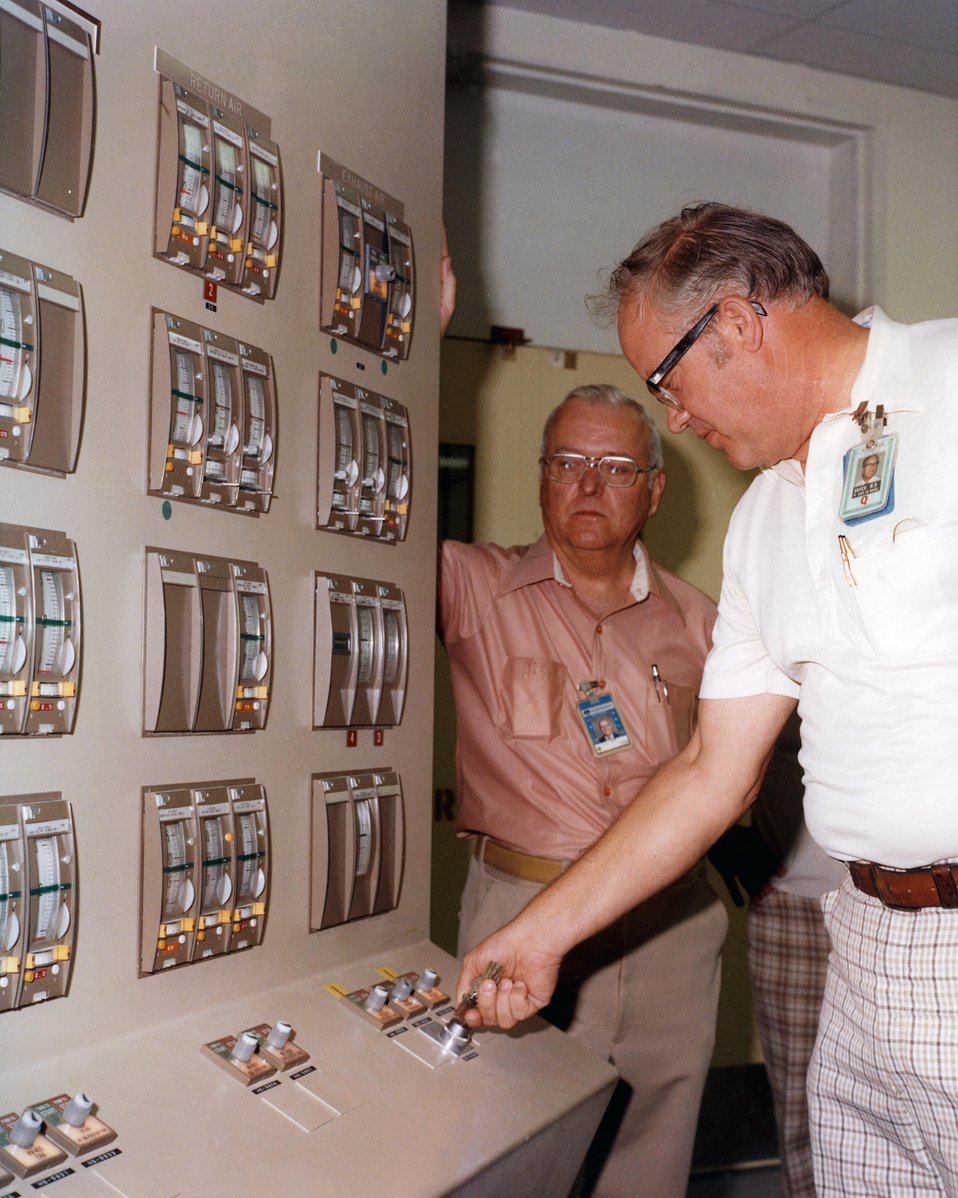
VENTILATION CONTROL PANEL IN BUILDING 371.

ALL PLUTONIUM OPERATIONS AT THE PLANT ARE CARRIED OUT IN HIGHLY SPECIALIZED FACILITIES, PROTECTING THE EMPLOYEES AND THE SURROUNDING POPULATION AND ENVIRONMENT. THE BUILDING IS DESIGNED TO WITHSTAND TORNADO, EARTHQUAKE, SNOW STORM, AND FLOOD DAMAGE. THE FACILITY IS ONE LARGE STRUCTURE DIVIDED INTO THREE AREAS: PLUTONIUM RECOVERY, WASTE TREATMENT, AND SUPPORT. PERSONNEL PROTECTION IS PROVIDED BY SPECIAL PROTECTION DEVICES, FOR EXAMPLE, PLUTONIUM IS HANDLED REMOTELY FROM INSTRUMENTED CONTROL ROOMS, IN SHIELD-ED GLOVE BOXES, AND IN CONCRETE VAULT CANYONS. THIS FACILITY IS CURRENTLY BEING REEVALUATED TO DEVELOP A REVISED AND UPGRADED PROCESS.